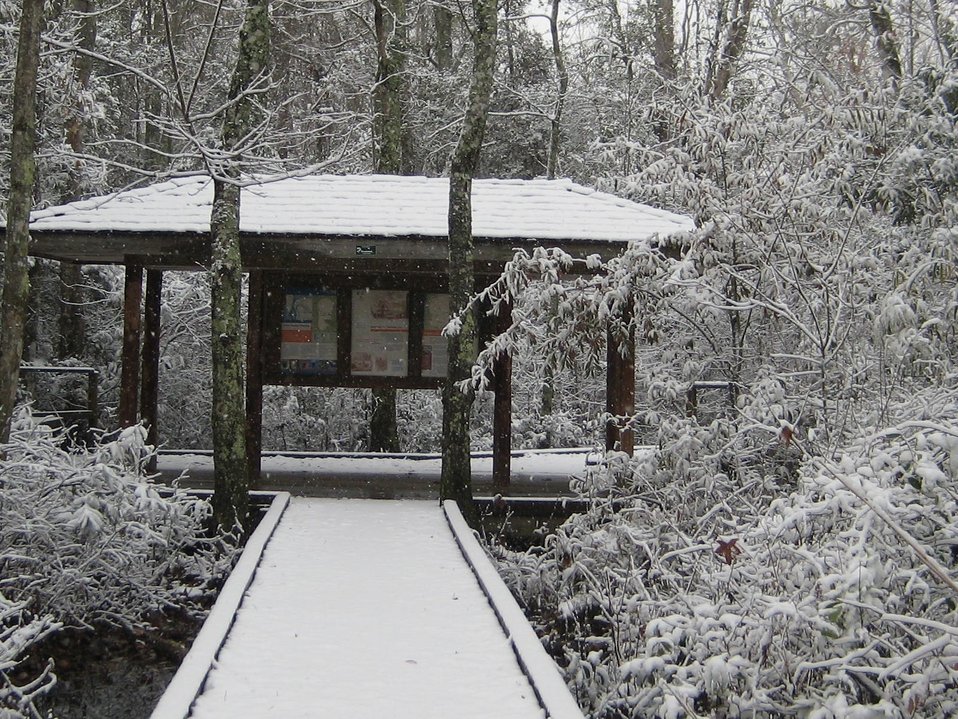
Jericho Kiosk

Great Dismal Swamp National Wildlife Refuge, VA.